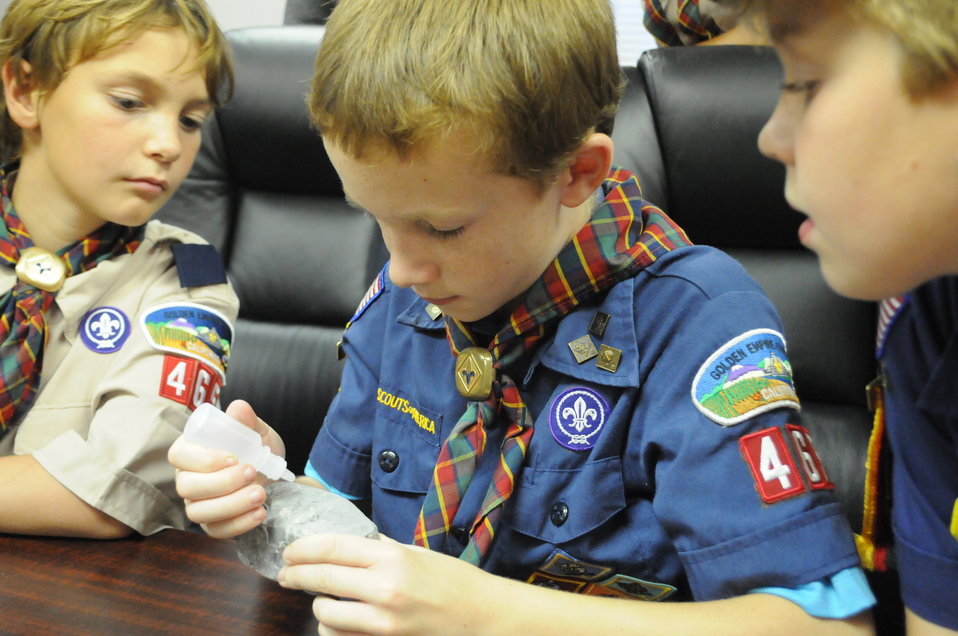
Cub Scouts Earn Geology Badge

Cub Scout Evan Young, of El Dorado Hills, Calif., applies a dilute solution of hydrochloric acid to a mineral sample to test for calcium deposits in Folsom, Calif., Nov. 8, 2012. Geologist Coralie Wilhite, of the U.S. Army Corps of Engineers Sacramento District, gave Cub Scout Pack 465 a geology lesson, including a field trip to the Folsom Lake Dike 7, to help them earn a merit badge. The spillway project is a joint effort of the U.S. Army Corps of Engineers, the U.S. Bureau of Reclamation, and state and local partners to reduce flood risk throughout the Sacramento region.